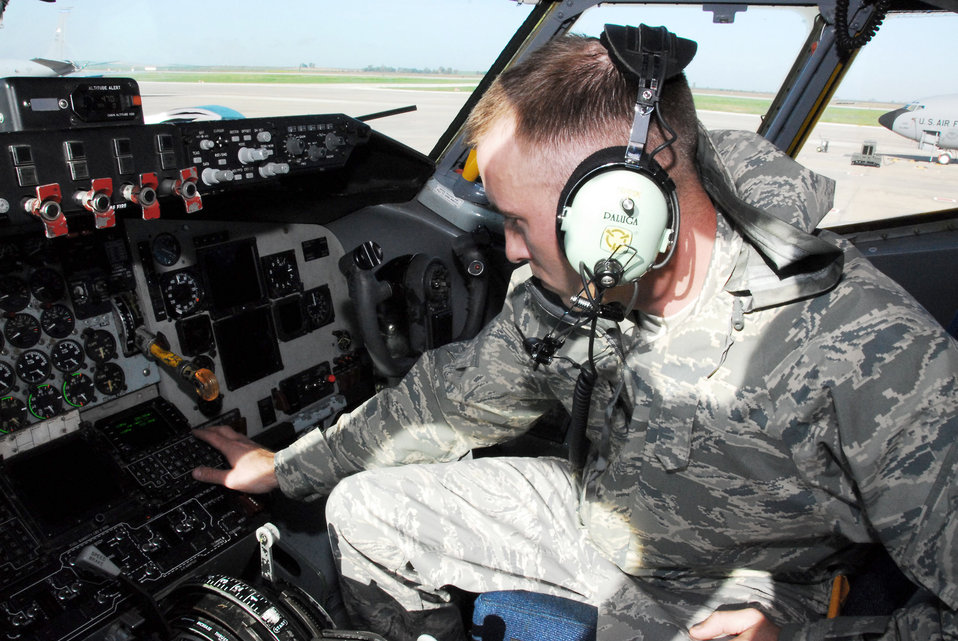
Citizen today, warrior Airmen tomorrow

Staff Sgt. Stephen Paluga repairs the navigation system of a KC-135 Stratotanker March 30, 2011. Members of the 313th AEW support Operation Unified Protector, a NATO-led mission in Libya to protect civilians and civilian-populated areas under threat of attack. The 313th AEW provides aerial refueling to U.S. and coalition aircraft with KC-135s and KC-10 Extenders. Sergeant Paluga is an Air National Guard avionics specialist deployed to the 313th Air Expeditionary Wing.